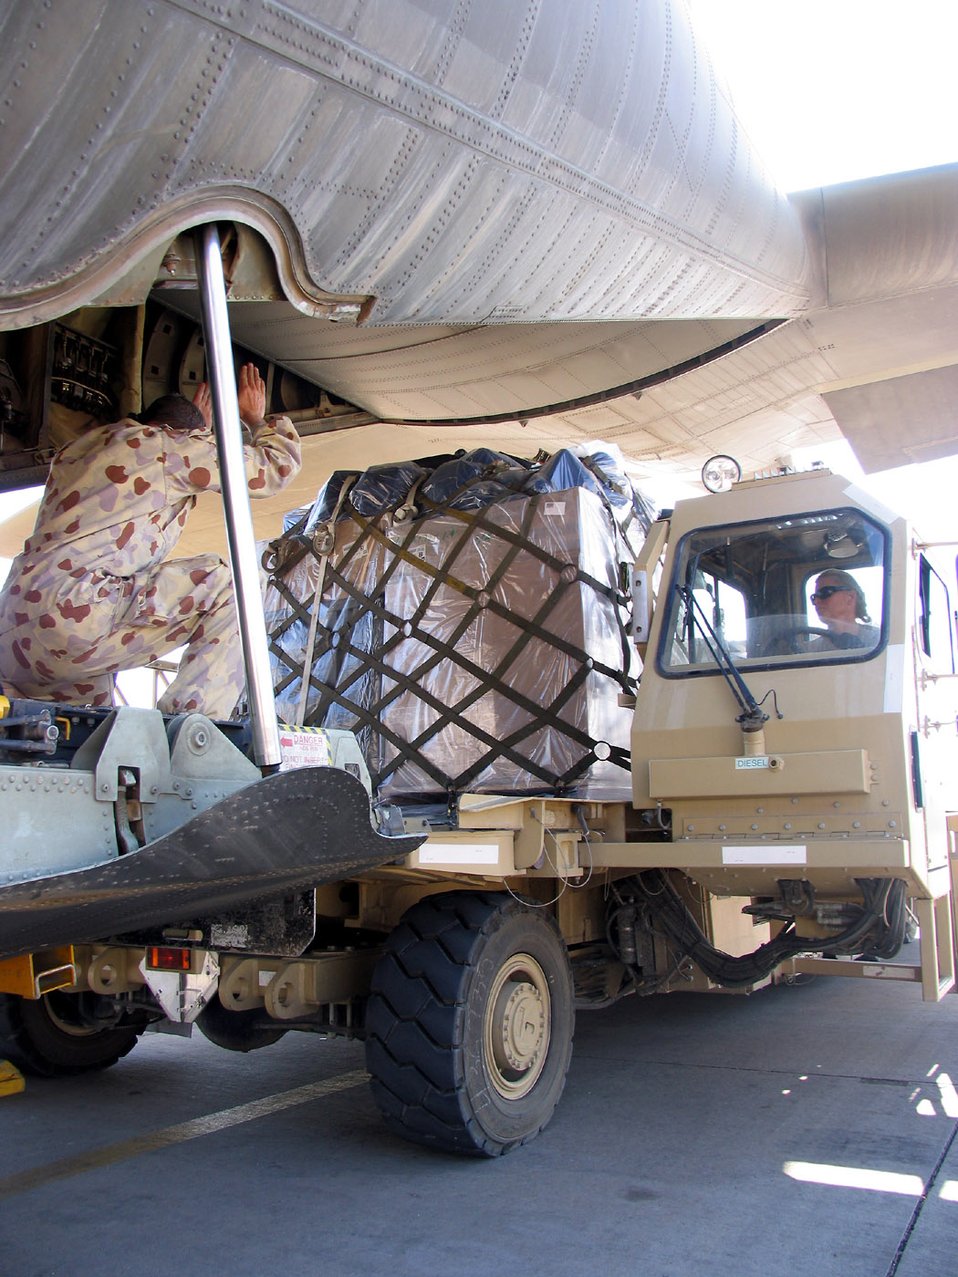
Records cargo movers

SOUTHWEST ASIA (AFPN) -- Tech. Sgt. Diana Buckner (right) helps loads a C-130 Hercules. Sergeant Buckner is with the 386th Expeditionary Logistics Readiness Squadron and deployed from the 86th Aerial Port Squadron at McChord Air Force Base, Wash.